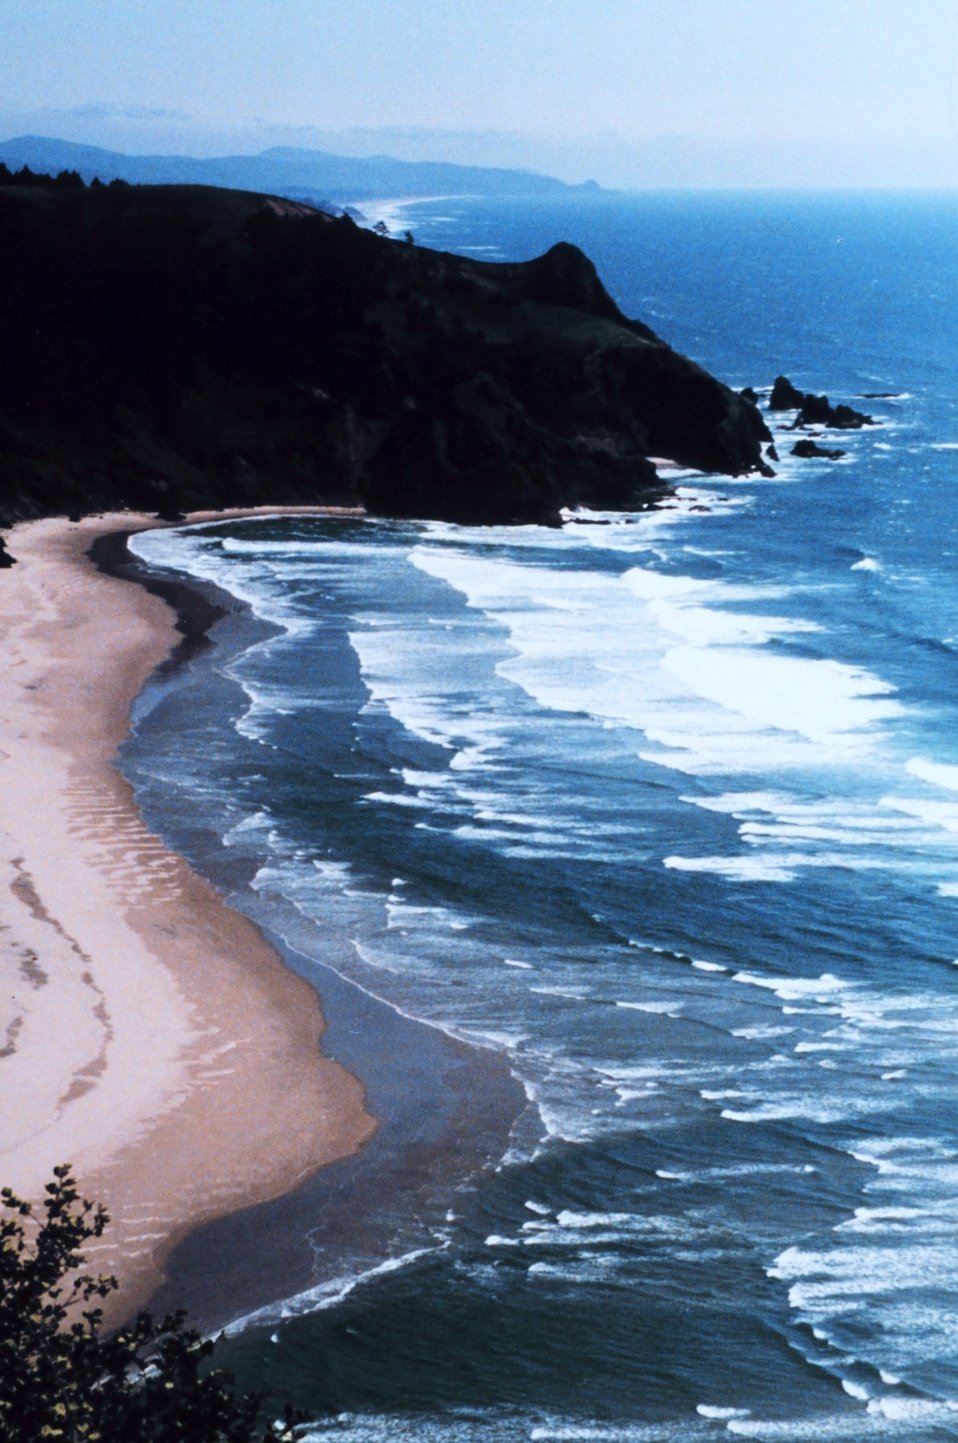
Cascade Head near Lincoln City.